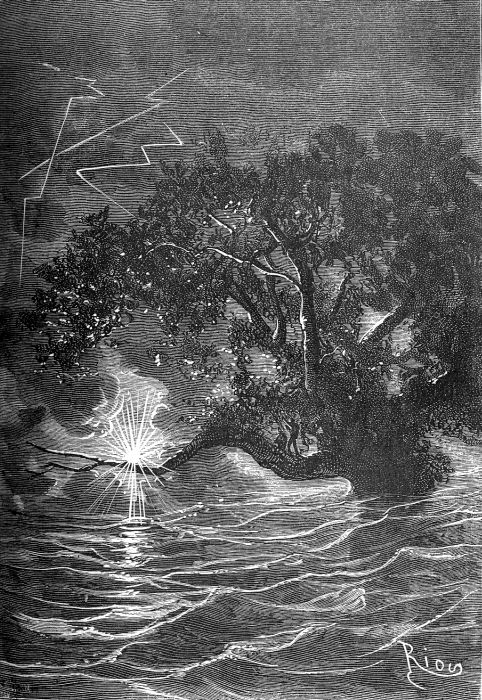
An ilustration from the novel 'In Search of the Castaways; or Captain Grant's Children' by Jules Verne drawn by Édouard Riou. Polski: Ilustracja powieści Juliusza Verne'a 'Dzieci kapitana Granta' autorstwa Édouarda Riou. Français : 'Les Enfants du capitaine Grant', Édouard Riou. Français : Les éclairs affectaient des formes variées.